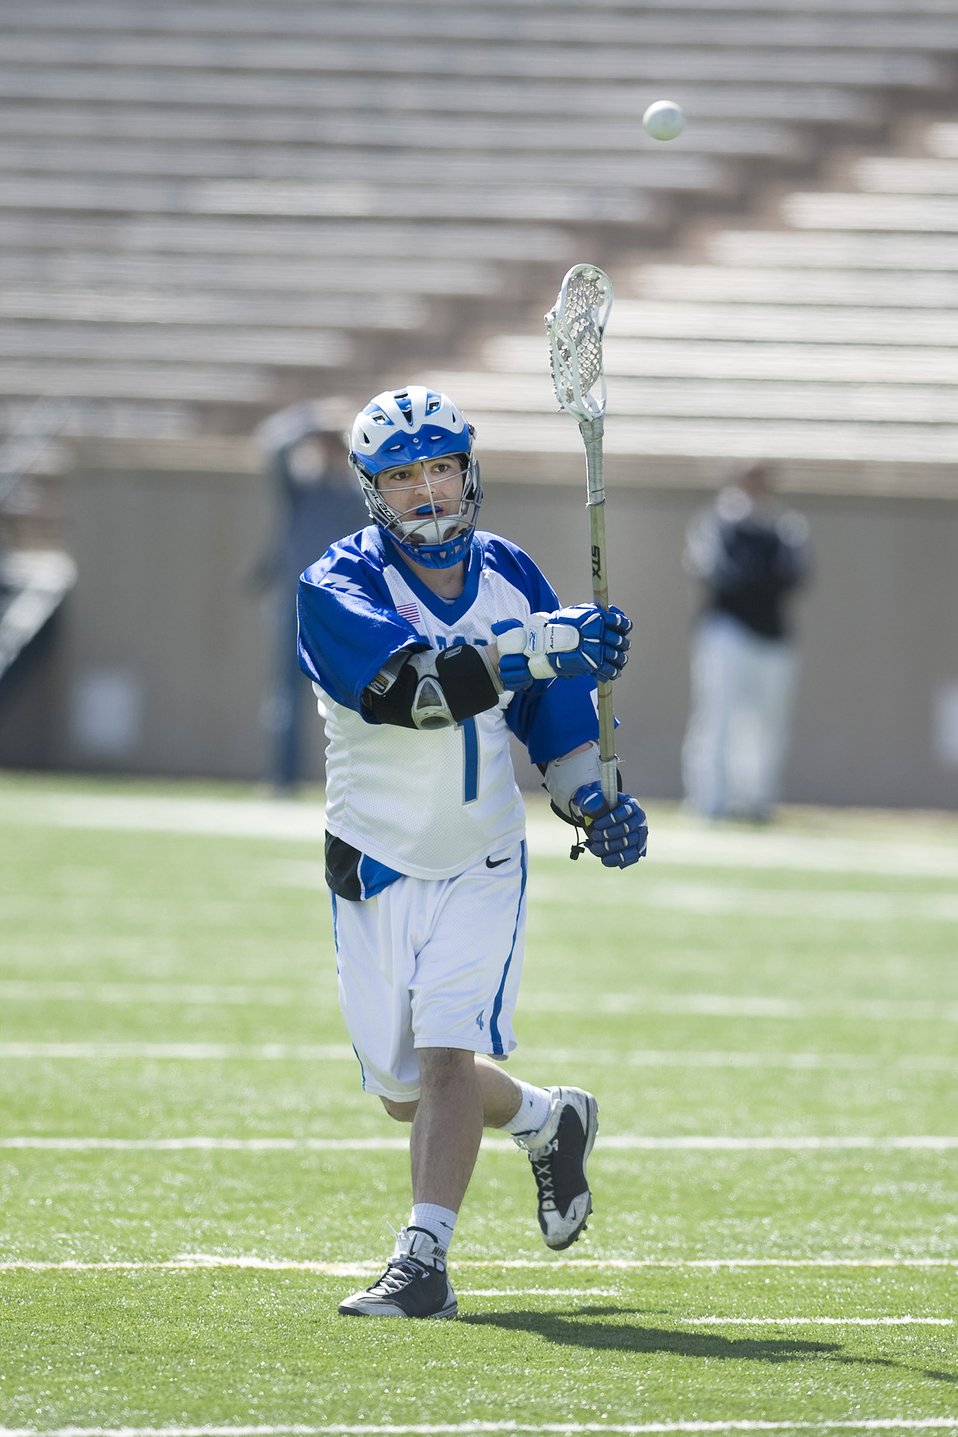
Lacrosse: Falcons defeat Black Knights

Falcon junior Zack Carroll makes a pass during the March 13, 2010, lacrosse game held at the U.S. Air Force Academy's Falcon Stadium in Colorado. The Falcons defeated the Black Knights 8-7 in overtime. This was Air Force's first lacrosse victory against Army after 17 tries.